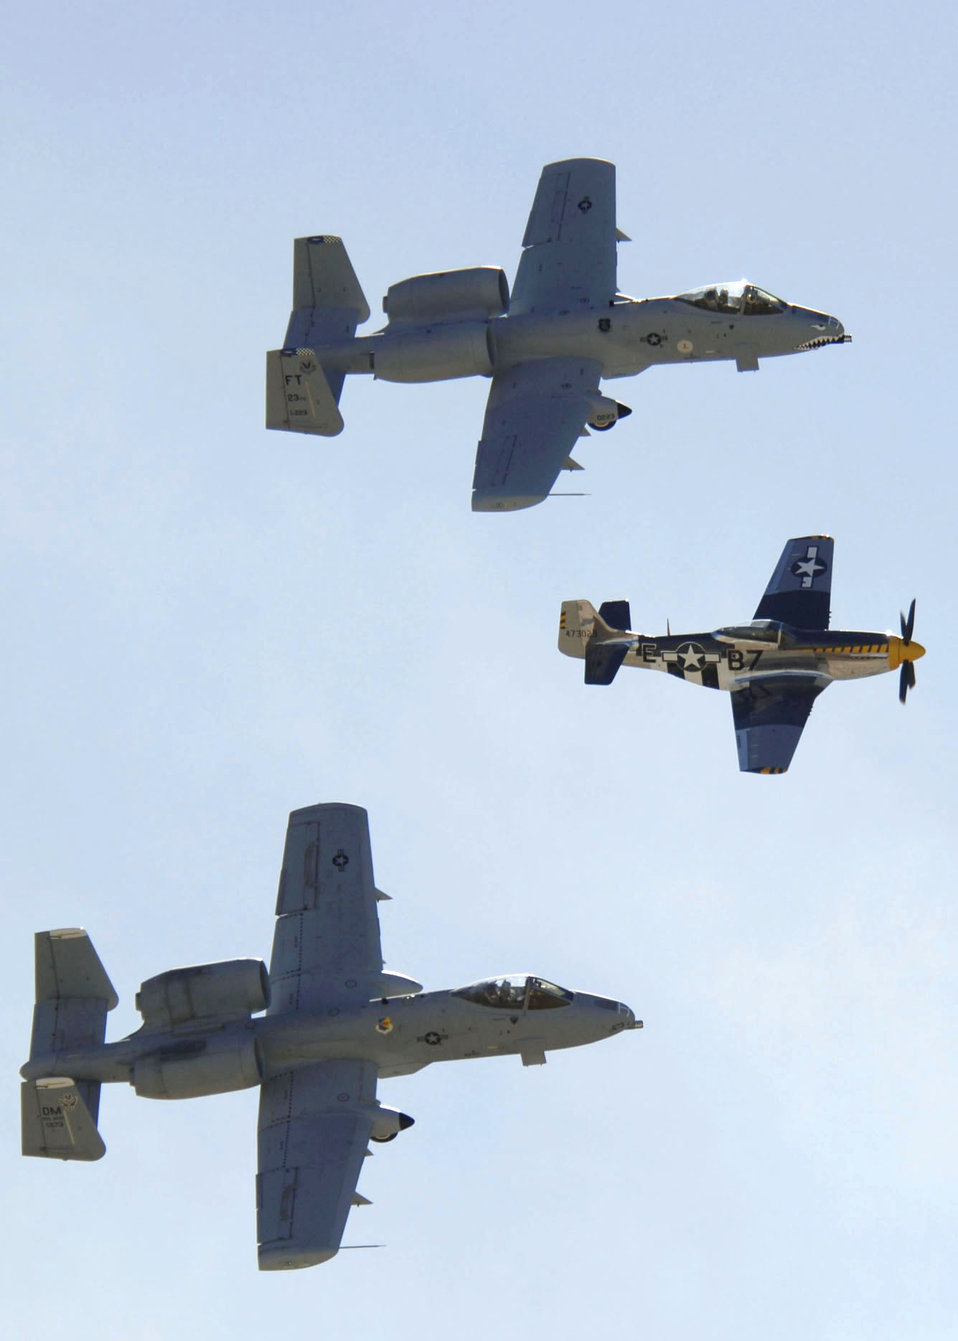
Demonstration team excels at Heritage Conference

Two A-10 Thunderbolt IIs flank a P-51 Mustang to demonstrate aerial capabilities March 3 during the 2007 Heritage Conference at Davis-Monthan Air Force Base, Ariz. The conference provides an opportunity for ACC demonstration pilots to train together with modern and historic military aircraft in preparation for the upcoming air-show season.